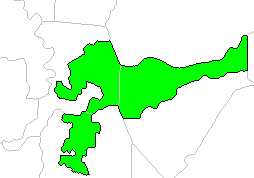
Map of California's 10th State Assembly district